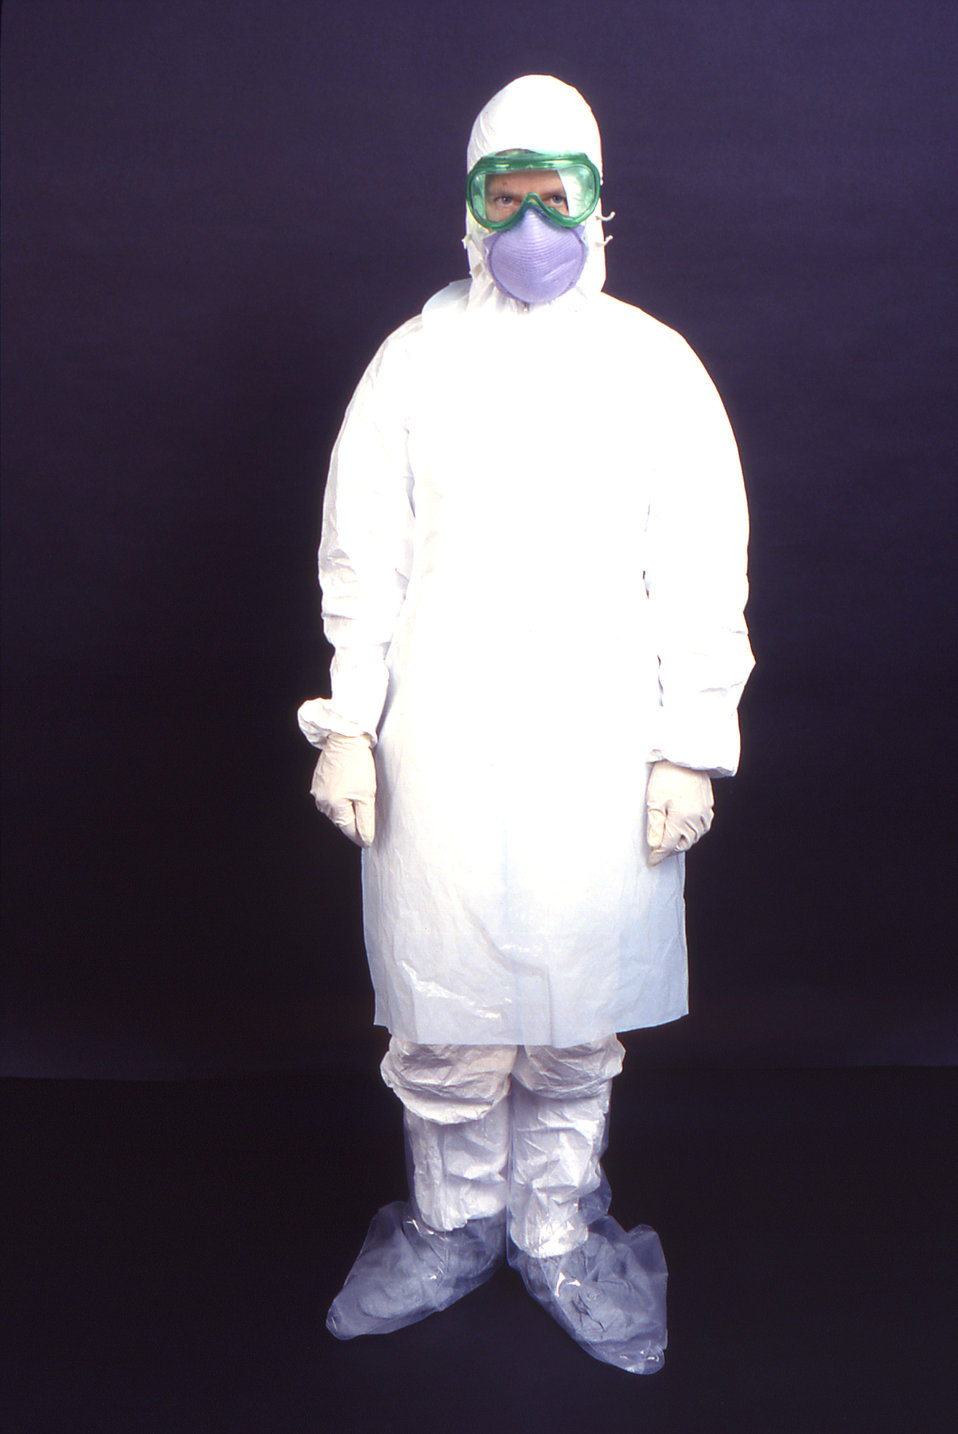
This 1995 image depicts an anterior view of a laboratory technician wearing garments usually worn by field techs including a disposable white coverall, a disposable plastic apron, head covering, latex gloves, and foot coverings, and a N95 face mask.